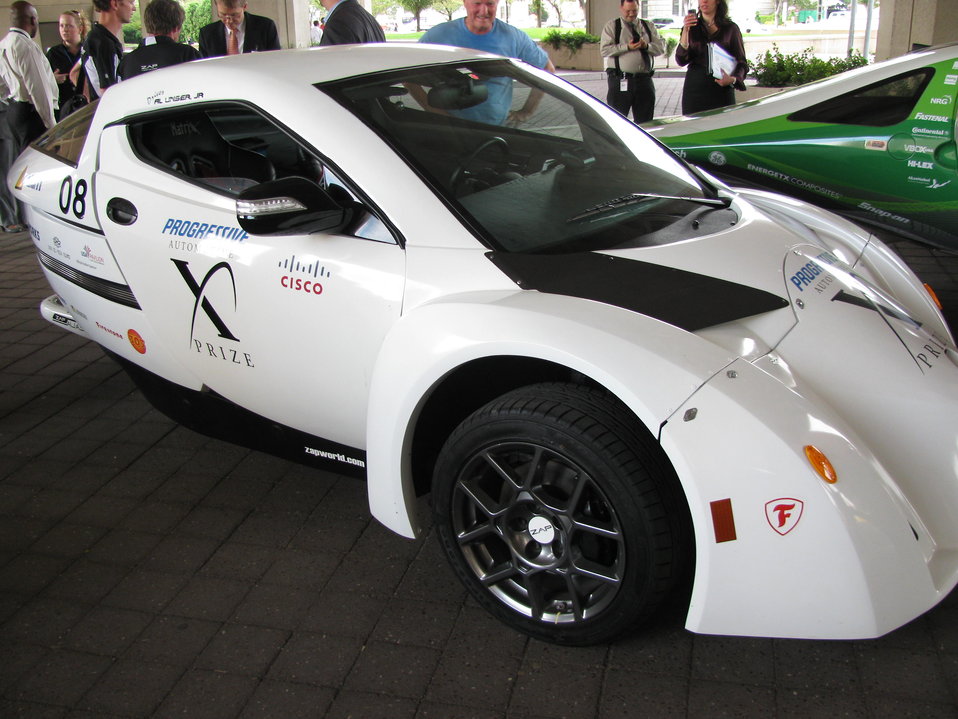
X Prize 071